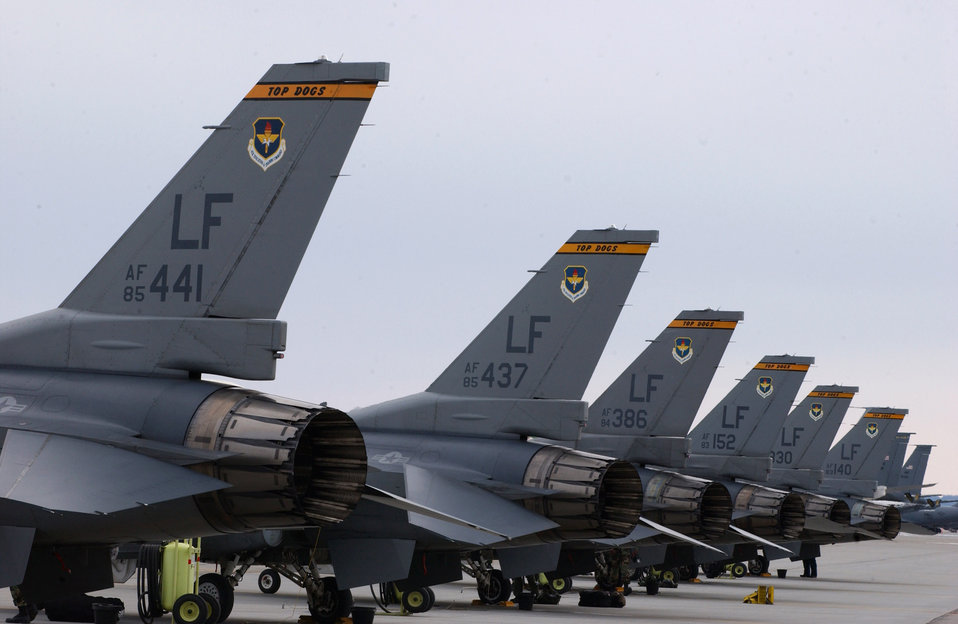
Red Flag forces huddle up at Eielson

Eight F-16 Fighting Falcons sit ready to fly for Red Flag-Alaska 07-1 in April at Eielson Air Force Base, Alaska. Red Flag-Alaska gives pilots and aircrews at least 10 sorties in a realistic simulated combat environment. It is conducted on the Pacific Alaskan Range Complex with air operations flown out of Eielson and Elmendorf Air Force bases. These F-16s are from the 61st Fighter Squadron based at Luke AFB, Ariz.